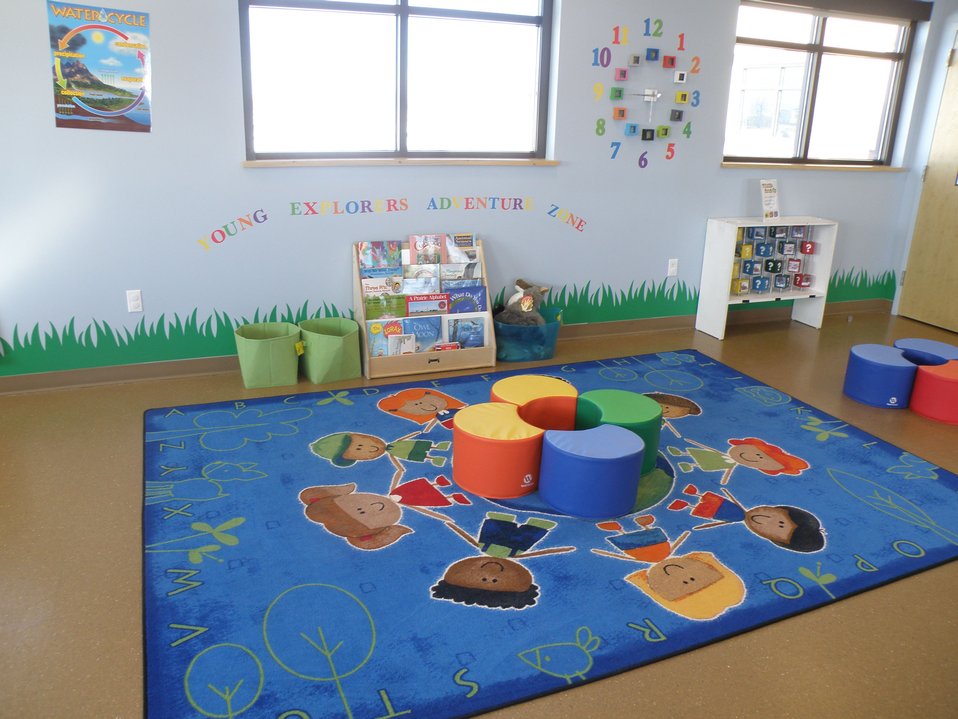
Discovery Room Reading Corner